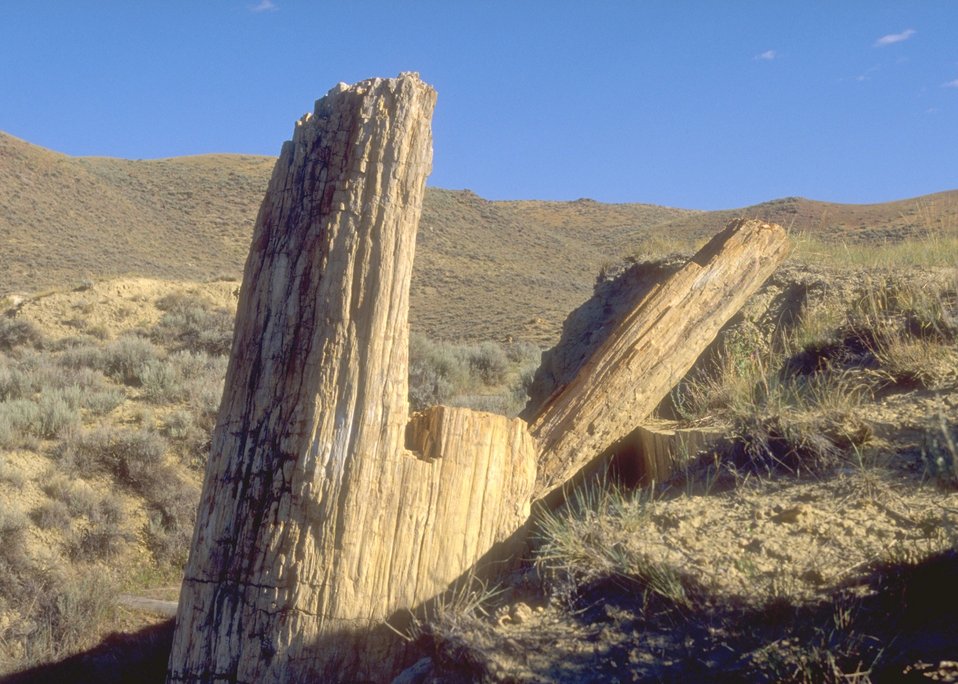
Dry Creek Petrified Tree Area, Buffalo Field Office.